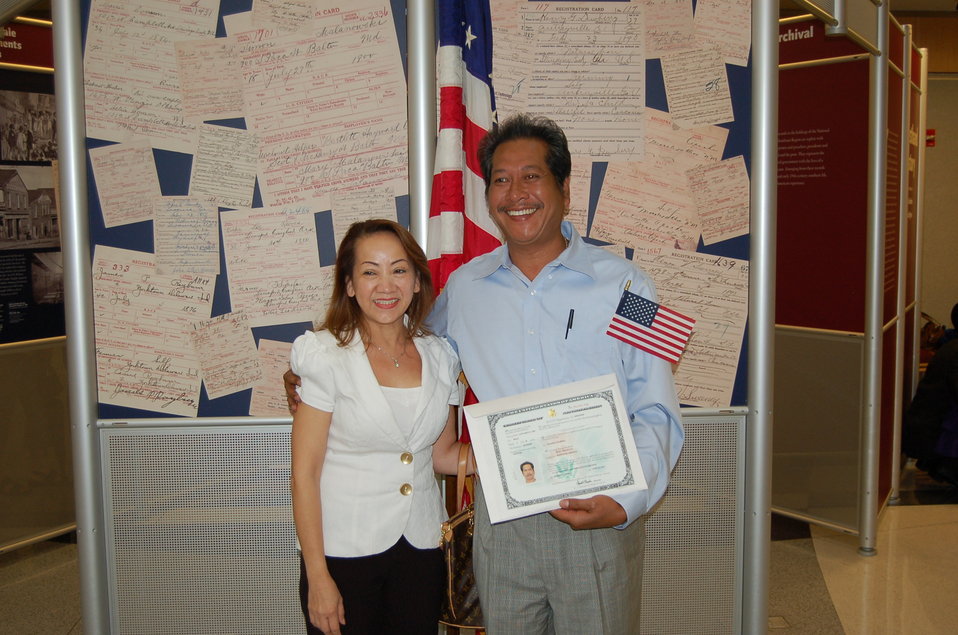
New Citizens